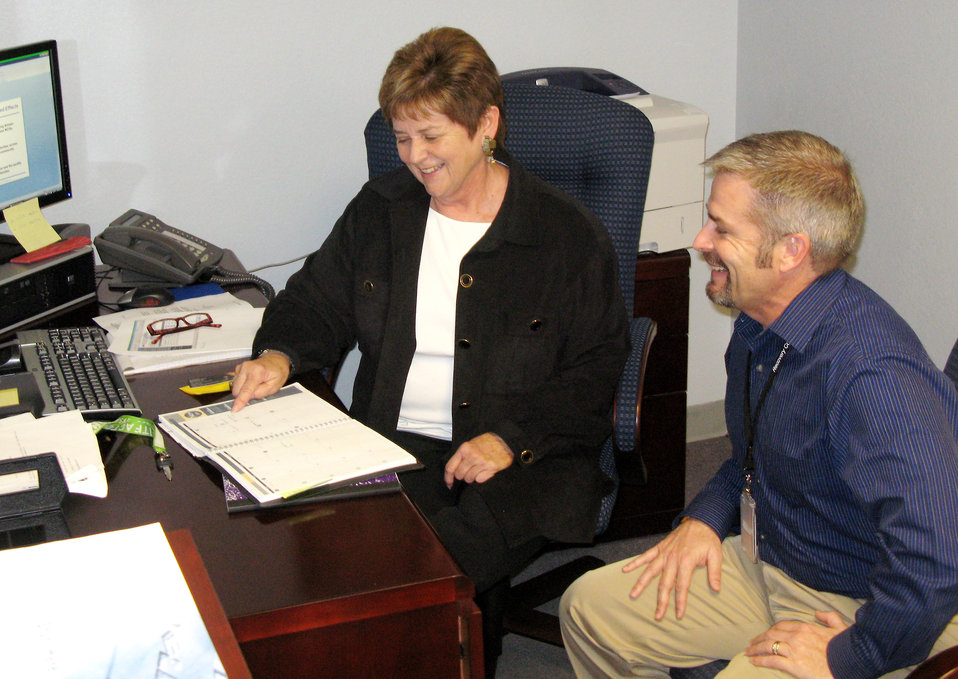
Nellis programs to have regional reach

Karen Wilson, coordinator for the new Caring for People pilot program at Nellis Air Force Base, Nev., and Jeffrey McClish, the base's new Recovery Care Coordination Program coordinator, are ramping up programs to support families of deployed military members, and wounded, ill and sick servicemembers, respectively.